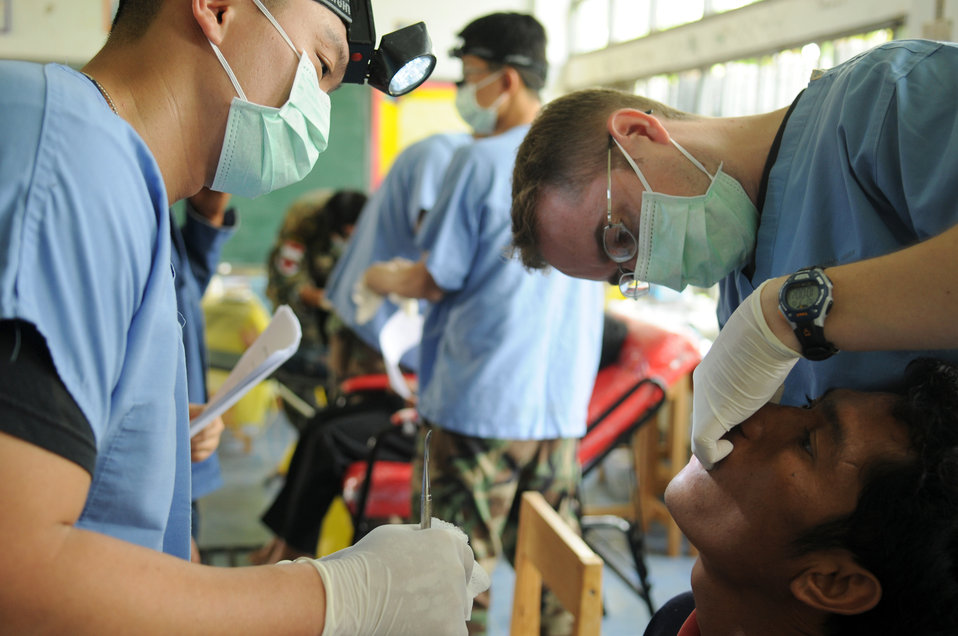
PACAF provides much needed dental and ophthalmologic care to underprivileged in Thailand.

Staff Sgt. Scotty Scott (left) assists Capt. Dana Jensen (right) with a tooth extraction during a joint and multinational humanitarian mission to provide much needed dental care to Thailand's underprivileged during Cope Tiger 2009 on March 16. Cope Tiger is an annual exercise conducted in Thailand to improve combat readiness and combined and joint interoperability of U.S., Thai and Singaporean forces while enhancing regional security and providing humanitarian support. Captain Jensen is a dentist from the 18th Dental Squadron at Kadena Air Base, Japan. Sergeant Scott is a dental technician from the 374th Dental Squadron at Yokota AB.